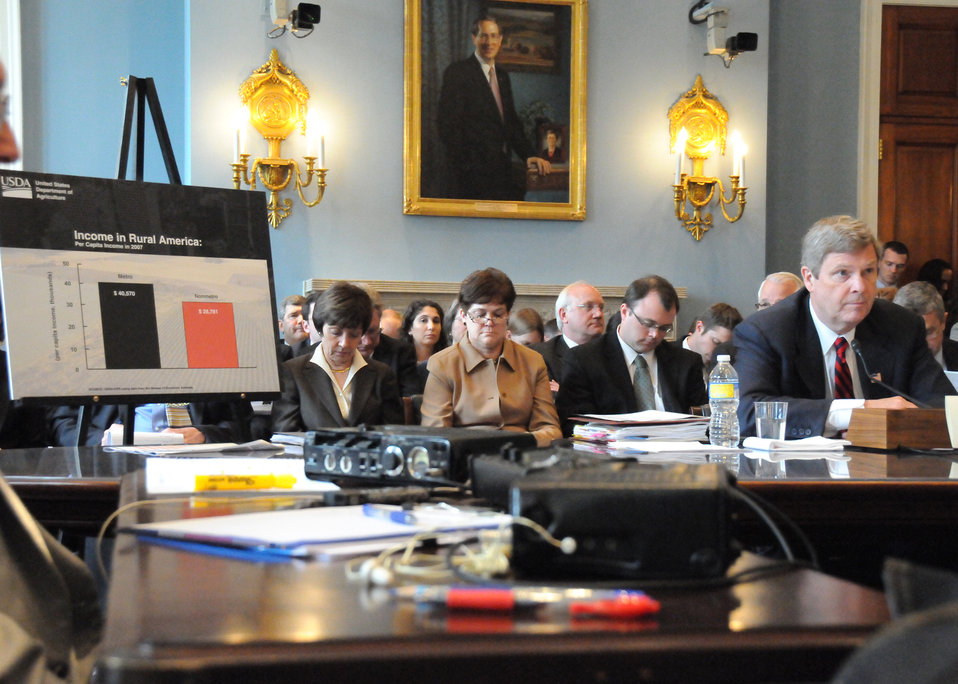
Agriculture Secretary Tom Vilsack testifies before the House Committee on Agriculture at the Longworth House Office Building in Washington, D.C., on Wednesday, April 21, 2010. Secretary Vilsack comments on a chart showing income in Rural America. USDA photo 10di1320-43